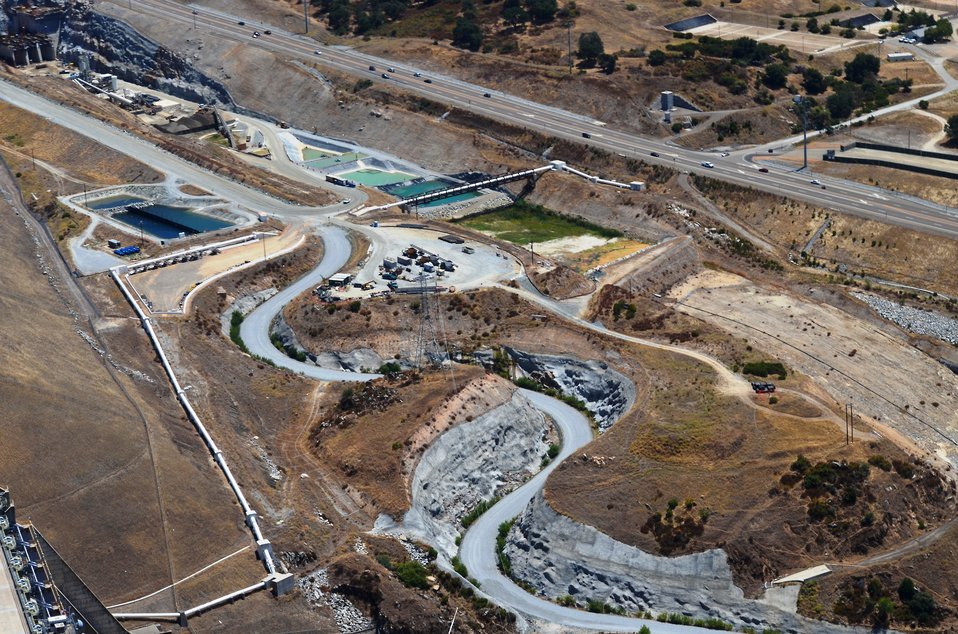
Aerial View of Folsom Dam Auxiliary Spillway

An aerial view shows the construction site of the Folsom Dam auxiliary spillway in Folsom, Calif., July 16, 2013. Excavation began in 2011 to remove 3.5 million cubic yards of rock and soil from the site. In 2012, the first steel and concrete were placed for the control structure—essentially a second dam—that will stand as tall as the Statue of Liberty when completed. The completed dam and chute will include 350,000 cubic yards of concrete, enough to line up concrete trucks from Sacramento to Los Angeles; and 24 million tons of steel, enough to build two Eiffel Towers. The project is scheduled to be completed by October 2017 and is one piece of a larger plan to help the Sacramento region reduce the risk of flooding.